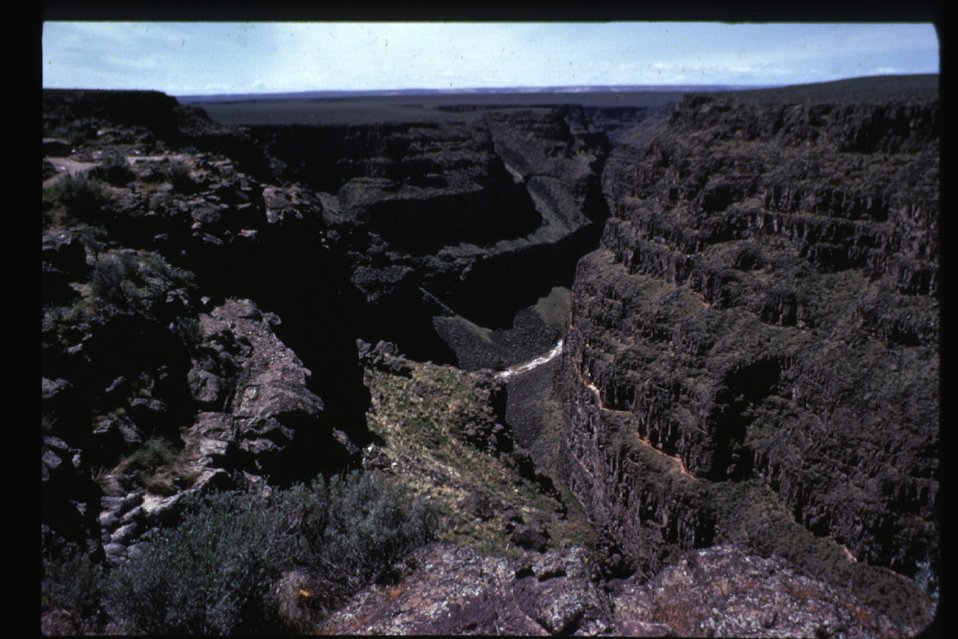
Bruneau River Owyhee Field Office LSRD Lower Snake River District